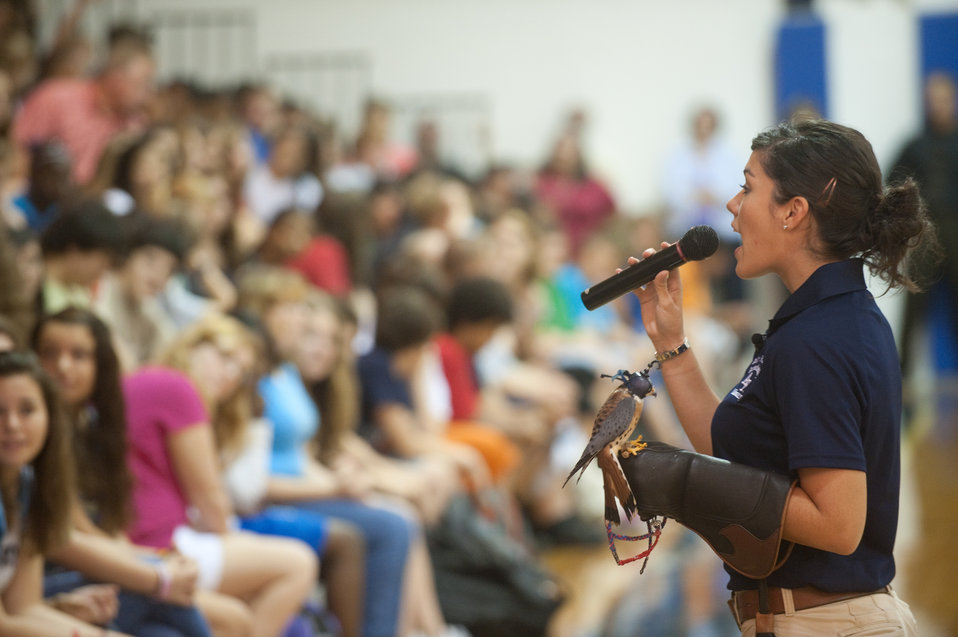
Small kestral captures school's attention

Cadet 3rd Class Danielle Cortez and